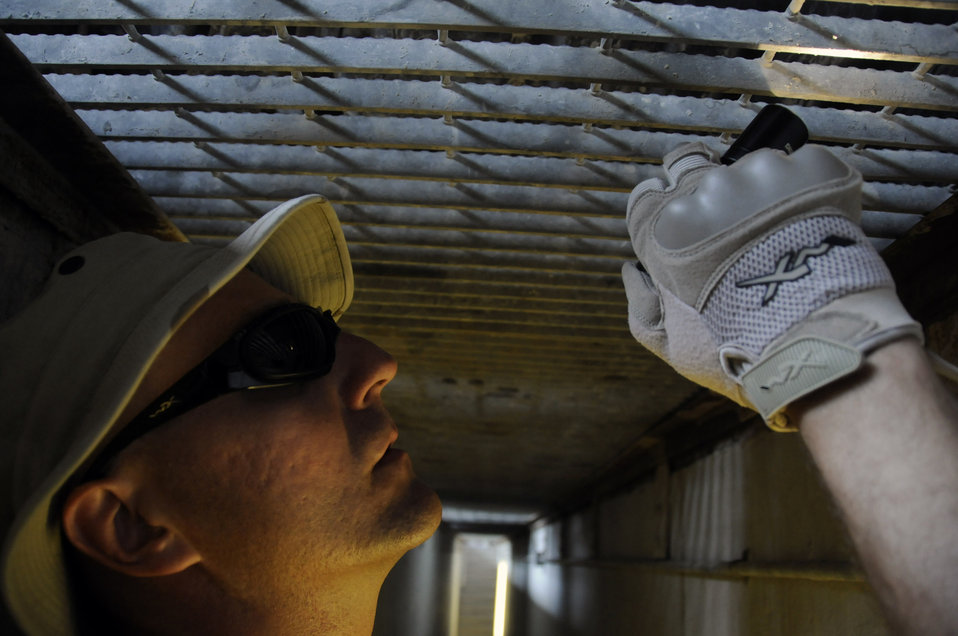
Nothing gets past us

Staff Sgt. Darryl Gullekson, a search member assigned to the 379th Expeditionary Security Forces Squadron, stands in a search pit to inspect the undercarriage of a vehicle Aug. 19 at an air base in Southwest Asia. Sergeant Gullekson and the rest of his team ensure the safety and security of the air base by carefully inspecting all incoming vehicles for explosives and weapons. Sergeant Gullekson, a native of Muskego, Wis., is deployed from Scott Air Force Base, Ill.